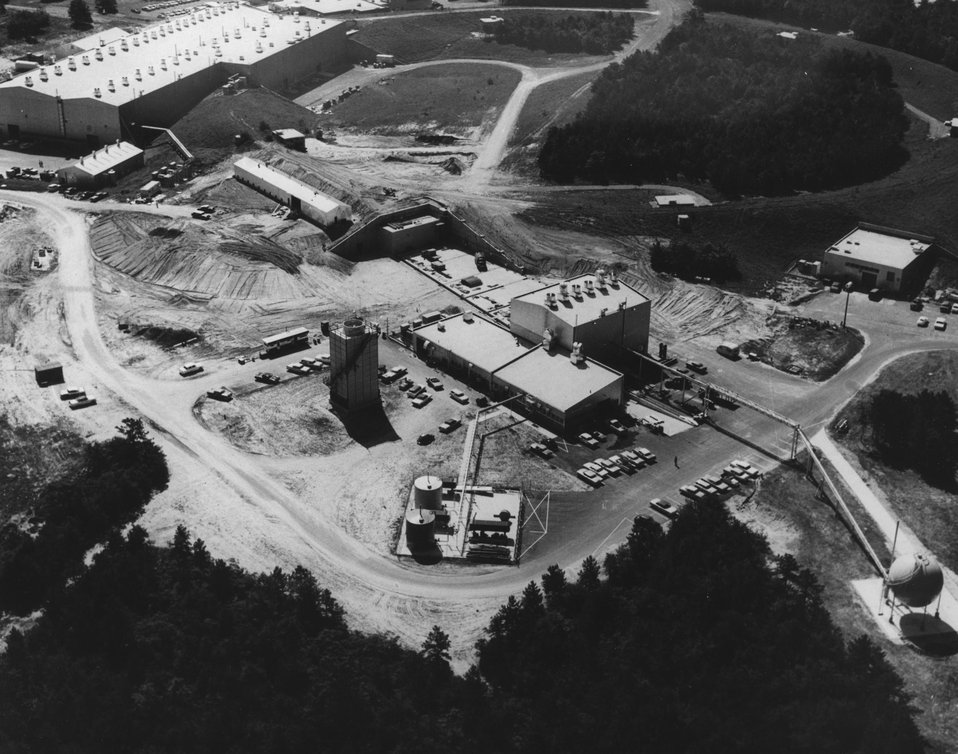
Construction of the 80-inch Bubble Chamber Building. In the right foreground is the safety sphere for the emergency containment of hydrogen; in the center is the gas storage area. To the rear of the Bubble Chamber Building is the AGS magnet tunnel ring. To the left of the magnet ring is the Experimental Building. c. 1963